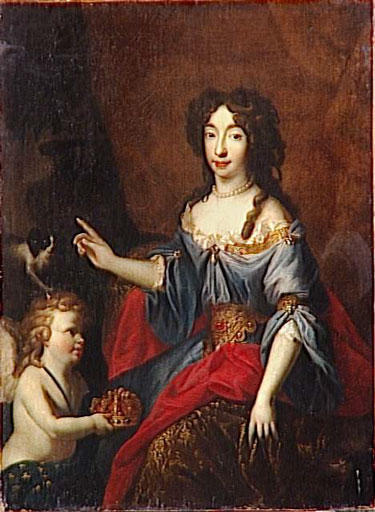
Dauphine-Bayern